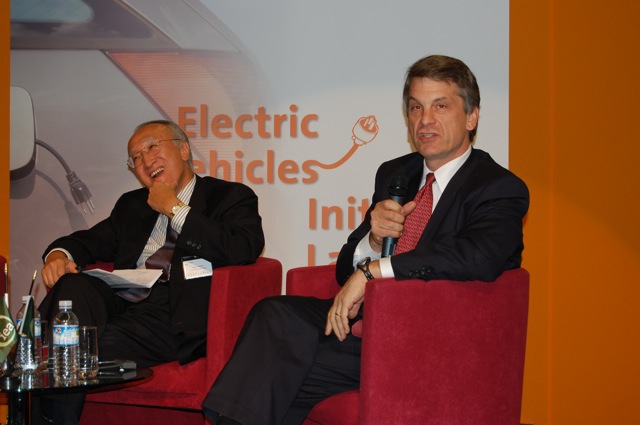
David Sandalow at the Paris Auto Show